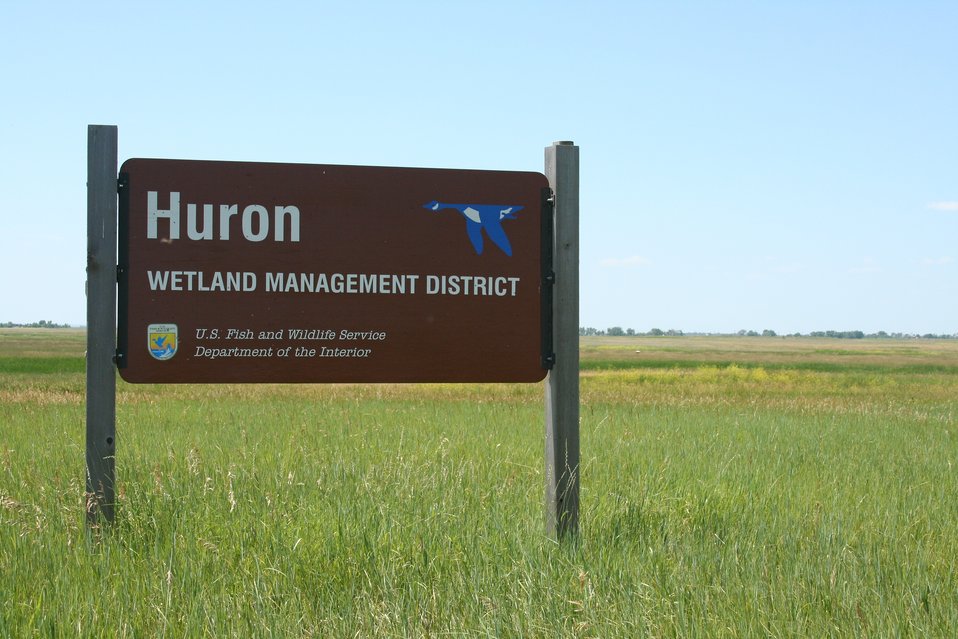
Huron Wetland Managment District Sign